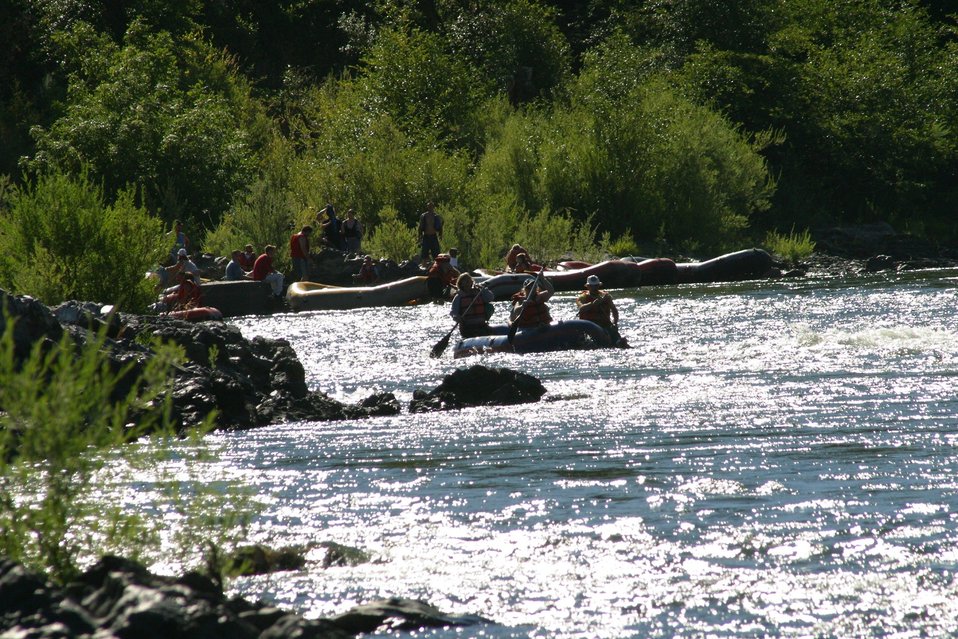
Boaters at Hog Creek